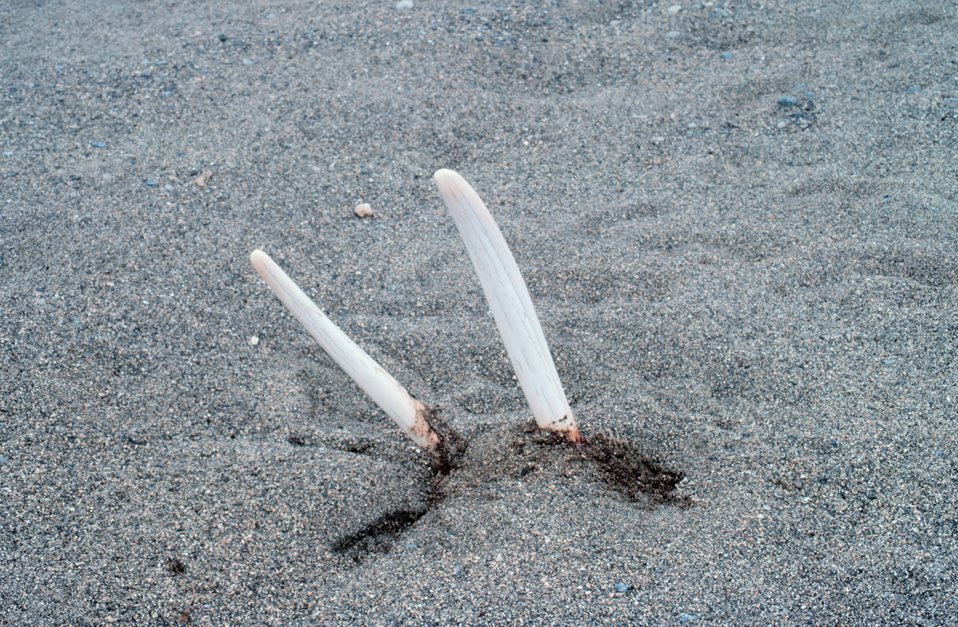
Currents carry many dead things to Punuk Island making it the graveyard of the Bering Sea.